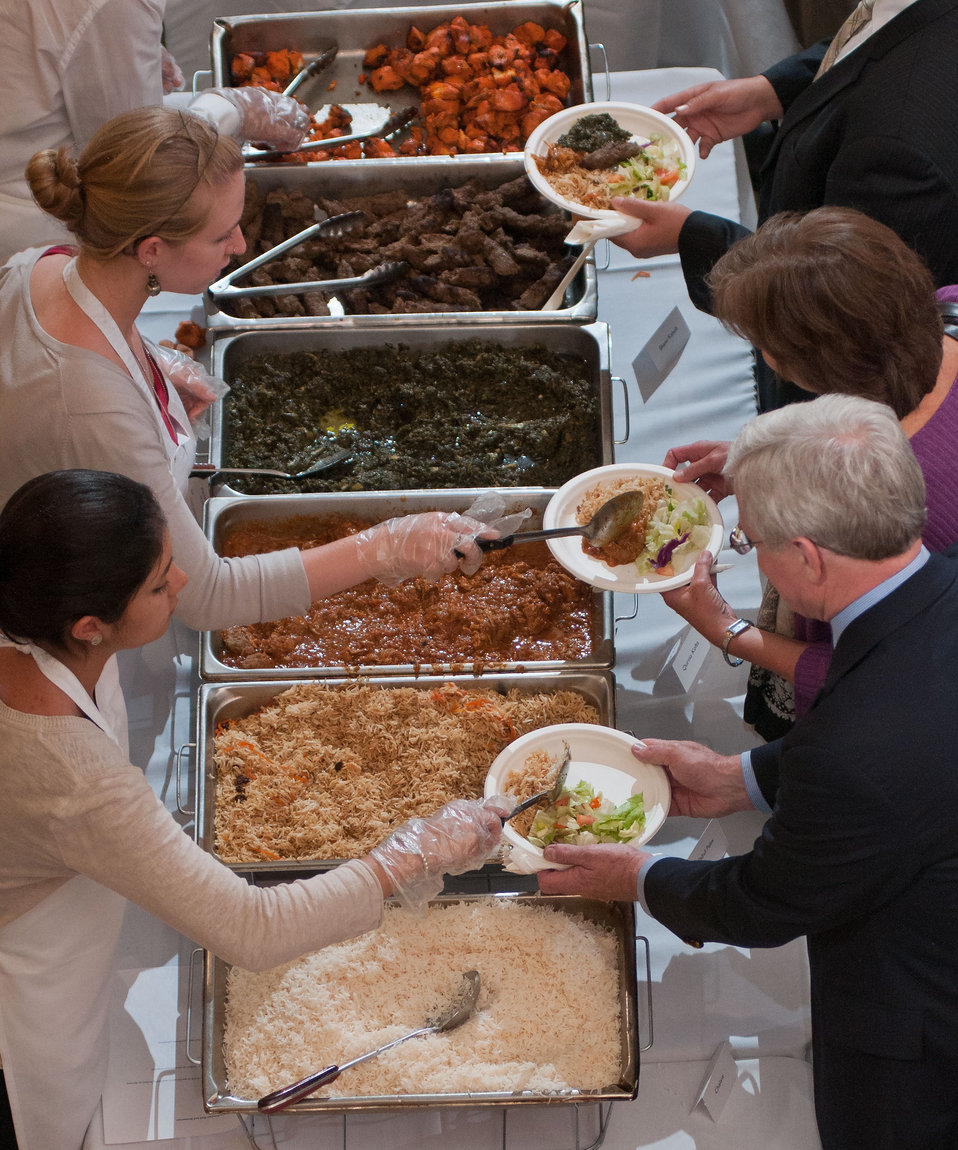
Long, fast lines moved through the buffet, after sunset, during the Iftar celebration, co-sponsored by the U.S. Department of Agriculture, U.S. Agency for International Development (USAID) and Islamic Relief USA, on Tuesday, August 7, 2012, an the USDA Whitten Building, in Washington, D.C. Ramadan is the month of fasting, intensive prayer, sacrifice and worship for Muslims around the world. Throughout this month, Muslims fast during the day, abstaining from consuming food from dawn to dusk and using this time to purify spiritually. Fasting reminds Muslims of the poverty and hunger suffered by many in the United States and worldwide. It is a connection with those who are hungry not through devotion, but through the many global factors that lead to hunger and famine. Iftar is the meal at which Muslims break their fast at sunset, usually by eating dates, according to the Prophetic tradition.